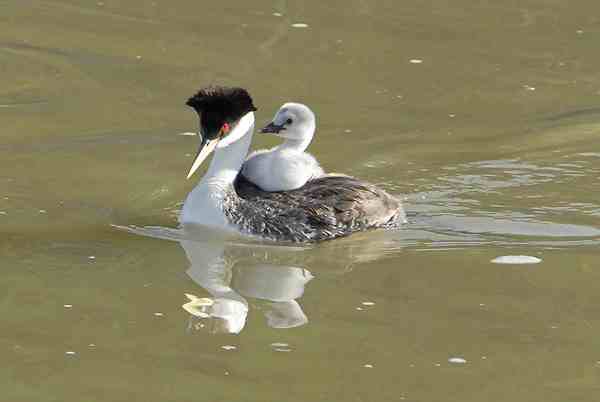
grebe with chick

Bear River Migratory Bird Refuge, UT